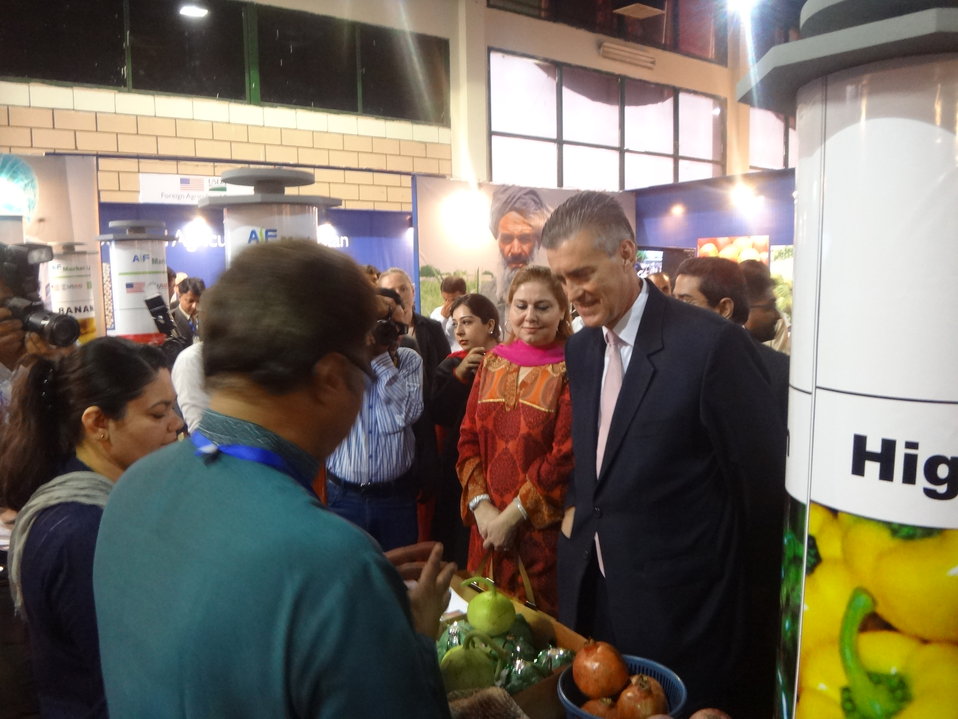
US Ambassador's visit to The Agribusiness Project at TDAP Expo, Karachi, September 27, 2013 (9)